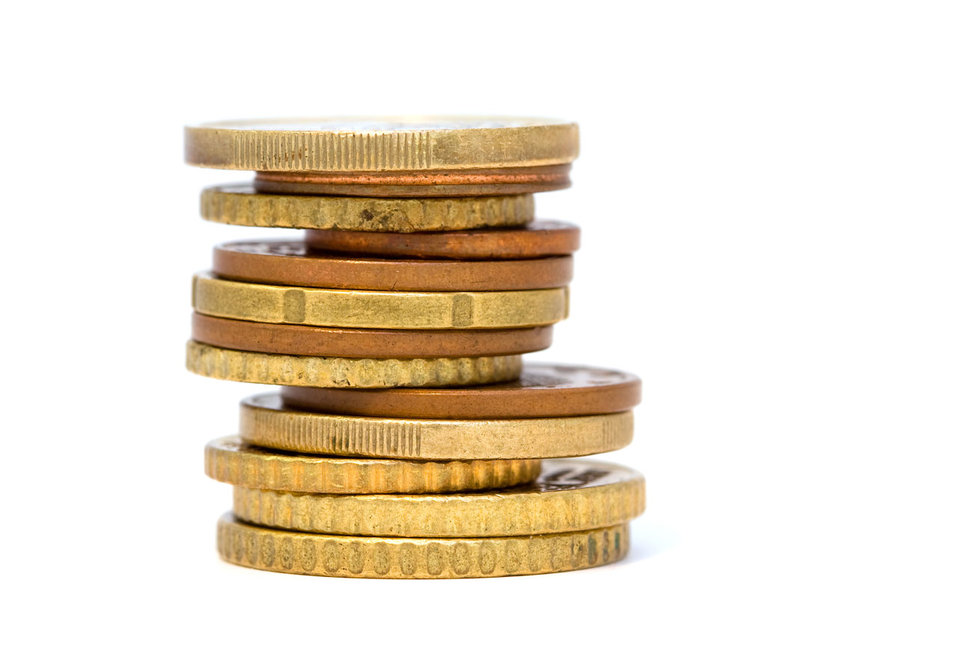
Coins

A pile of coins.